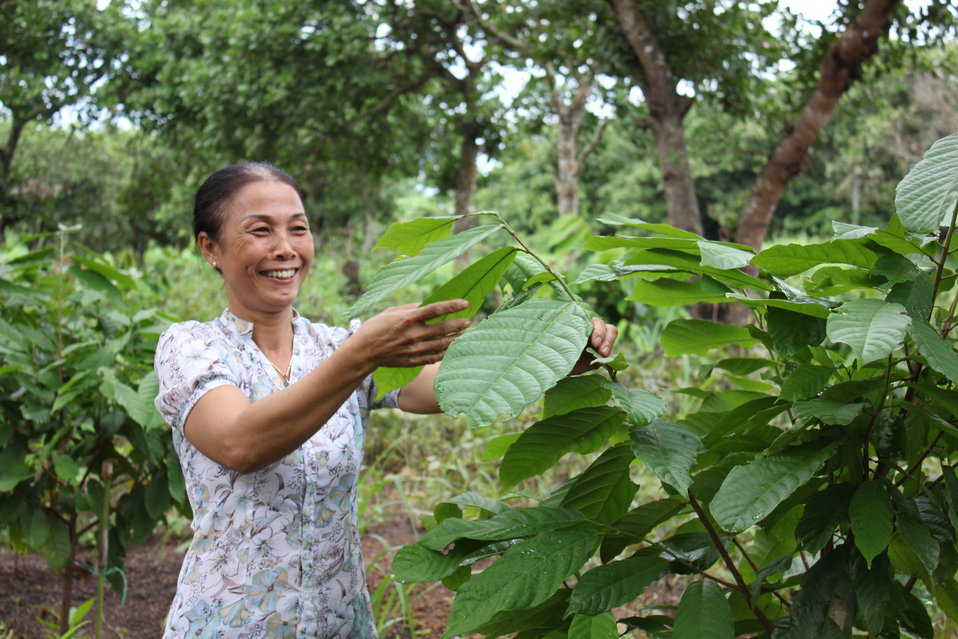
USAID supports cocoa cultivation in central Vietnam

Buon Don District, Dak Lak Province. August 6, 2013.